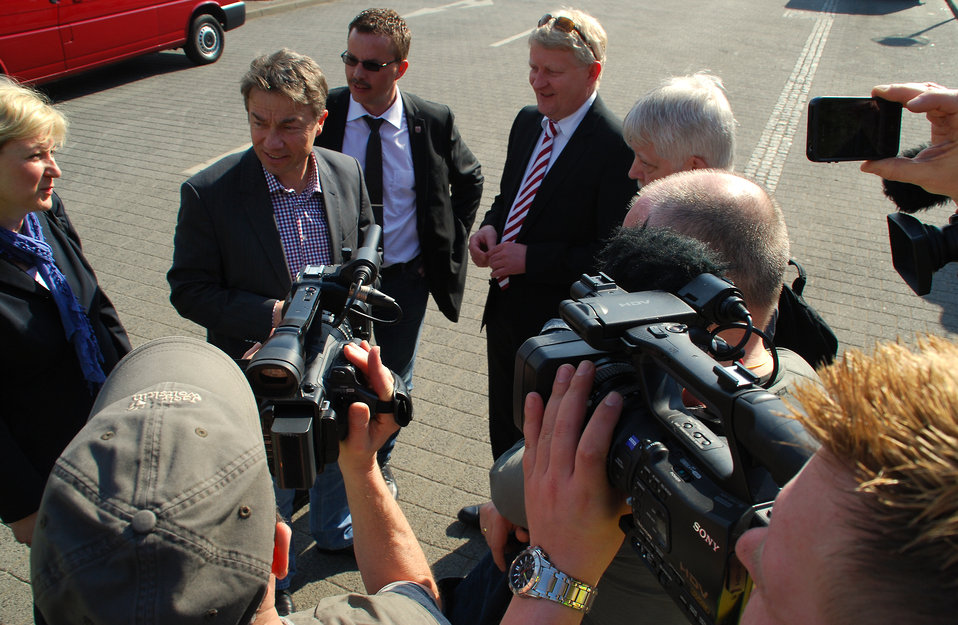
Proteste gegen den Nazi-Aufmarsch am 24.3.2012 in Frankfurt (Oder)